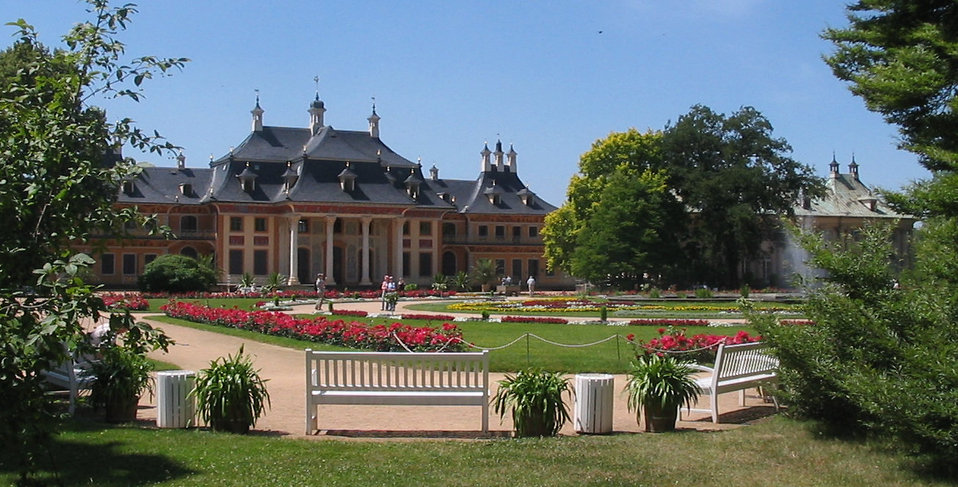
Deutsch: Schloss Pillnitz, Bergpalais Pillnitz Castle, Hillside Palace